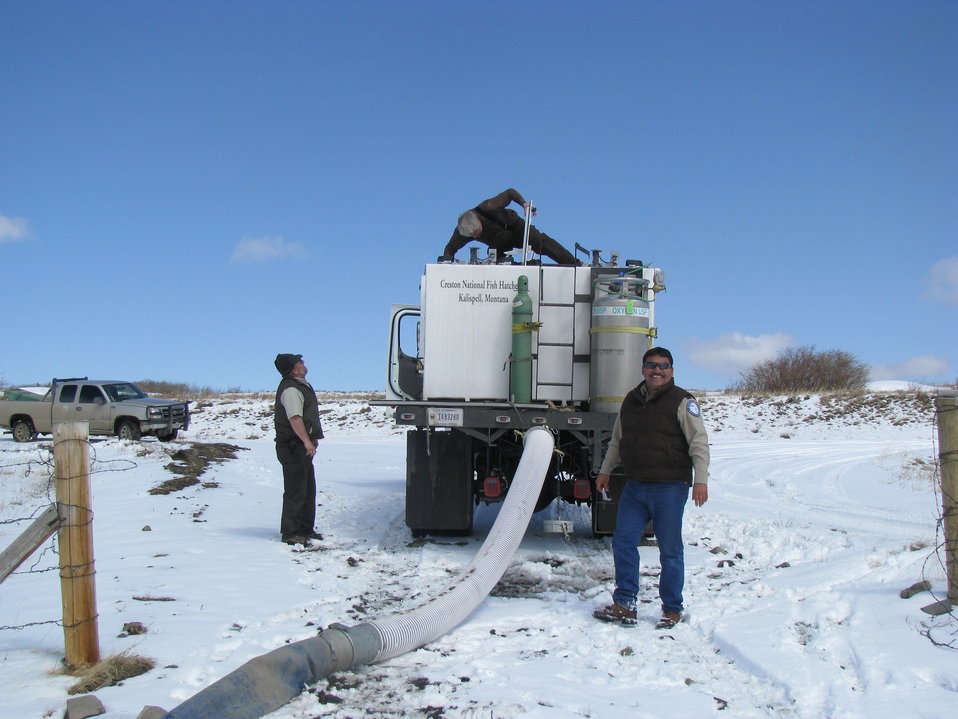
Creston National Fish Hatchery Stocking Fish at Dog Gun Lake